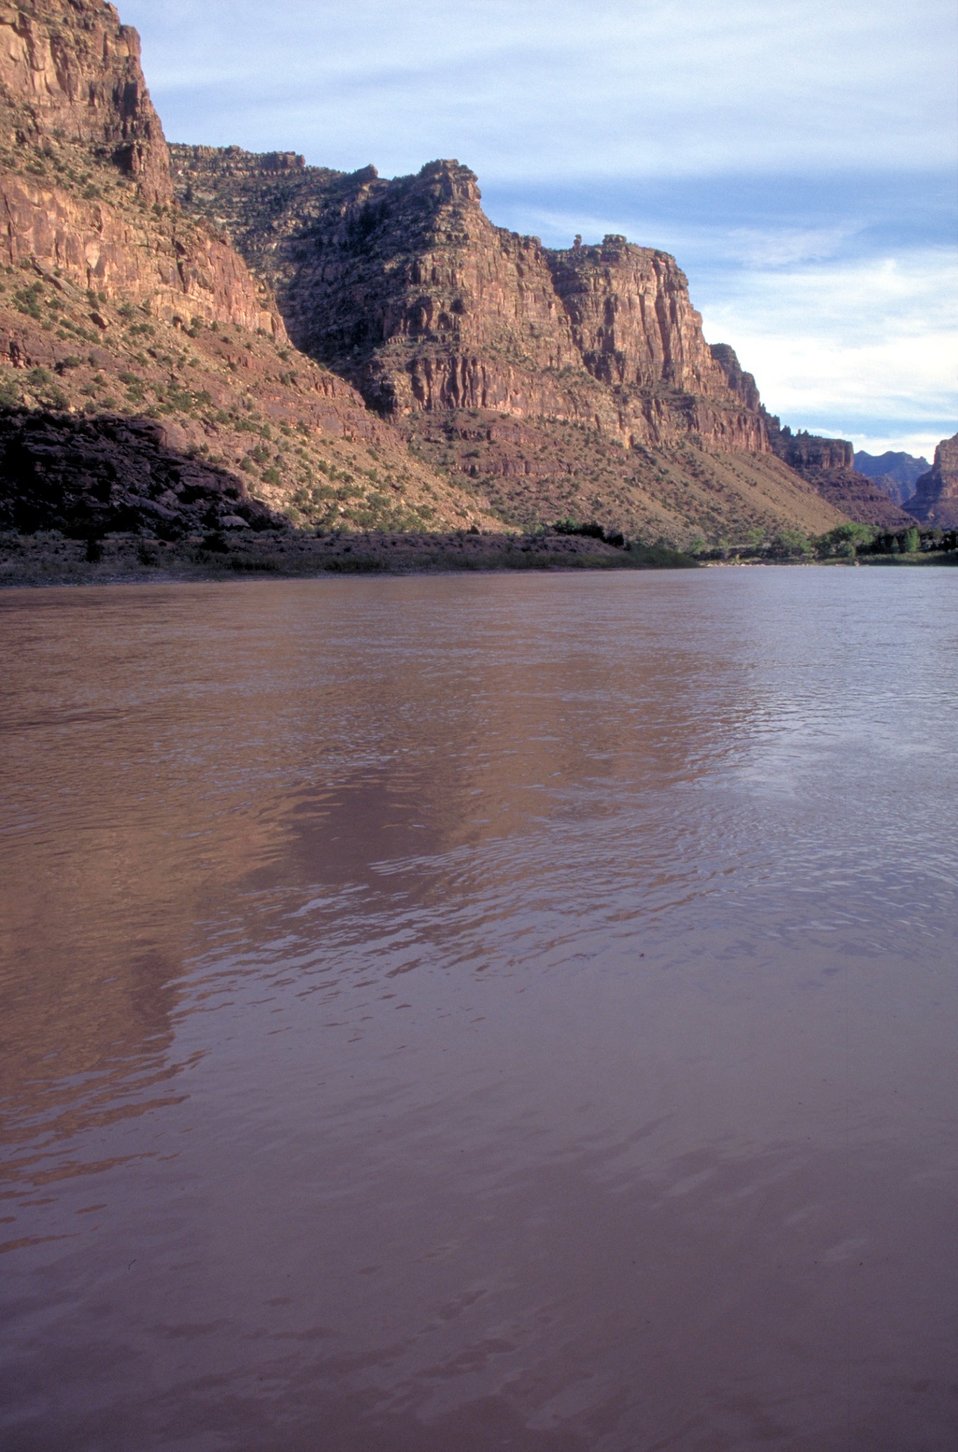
Desolation/Gray Canyons near Price, Utah.